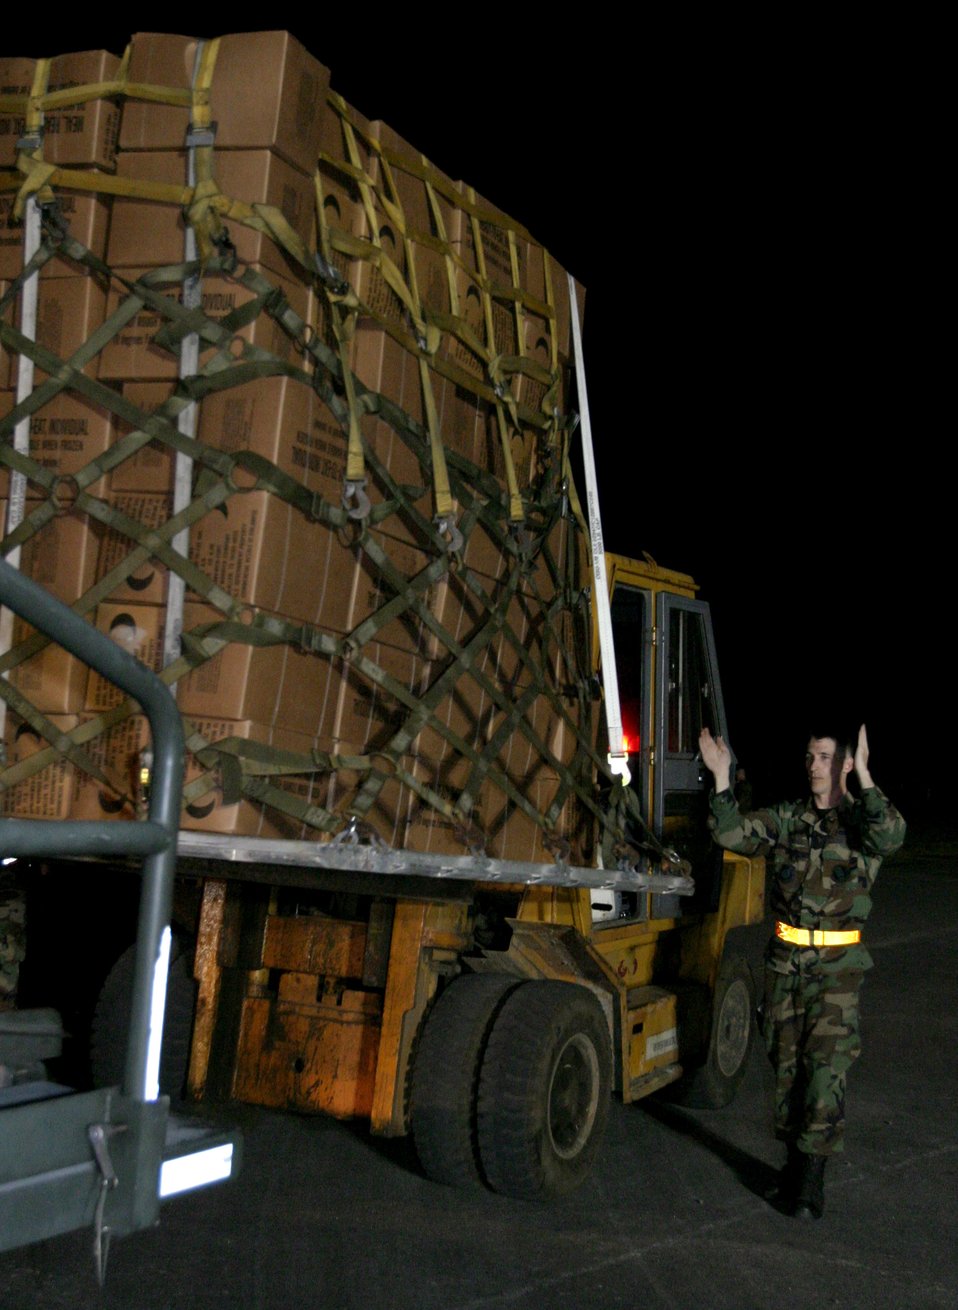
Philippine landslide relief

CLARK AIR BASE, Philippines (AFPN) -- Senior Airman James Lawley directs meals ready to eat onto a transport aircraft Feb. 19. The supplies are part of more than 40,000 pounds being flown to Taclabon Airfield, Philippines, in support of the humanitarian relief efforts for victims of the Feb. 17 landslide in the village of Guinsaugon on the island of Leyte, Philippines. Airman Lawley is an air transportation specialist with the 3rd Logistics Readiness Squadron.